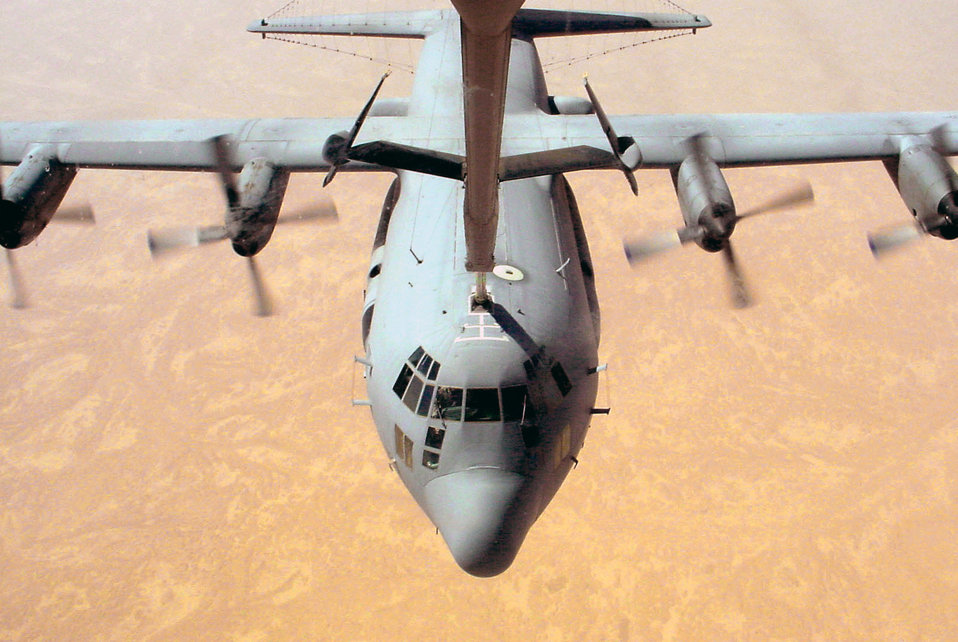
Calling home

OPERATION IRAQI FREEDOM (AFPN) -- An EC-130H Compass Call aircraft from the 41st Expeditionary Electronic Combat Squadron refuels while flying a mission over Iraq during Operation Iraqi Freedom. Squadron airmen will return home soon to Davis-Monthan Air Force Base, Ariz.